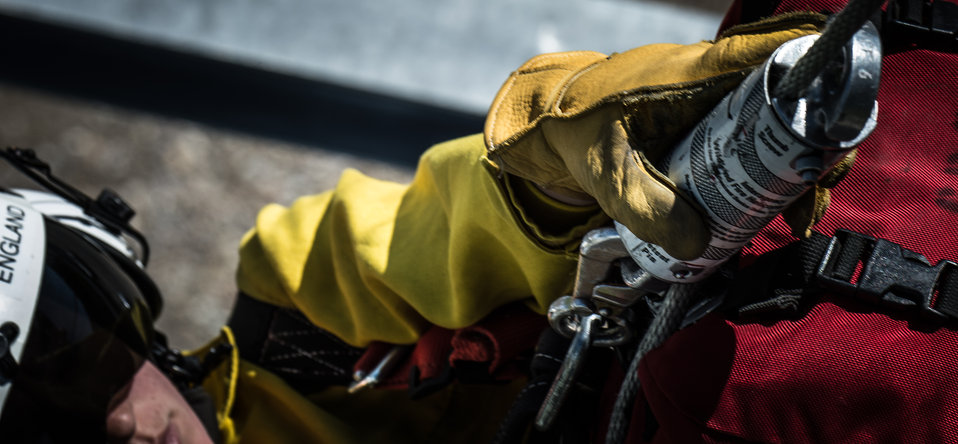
Veteran wildland firefighter rappeller Lacie England practices rappeling from a 40-foot rappel training tower at the U.S. Department of Agriculture (USDA) U.S. Forest Service (USFS) National Helicopter Rappel Program’s Rappel Academy at Salmon Air Base in Salmon, ID on Wednesday, May 14, 2014. From May 12, 2014, 72 veteran rappellers from all over the nation, 30 support staff, and three helicopters with flight crews attend the training at Salmon Air Base. Participants will rappel into the Perreau Creek area. The annual training is delivered in accordance with the National Rappel Operations Guide; strengthen leadership, teamwork, and communications within the rappel community, and produces quality aerial delivered firefighters for use in fire and aviation operations. The USDA Forest Service National Helicopter Rappel Program’s primary mission is initial attack. Rappel crews may be utilized for large fire support, all hazard incident operations, and resource management objectives.